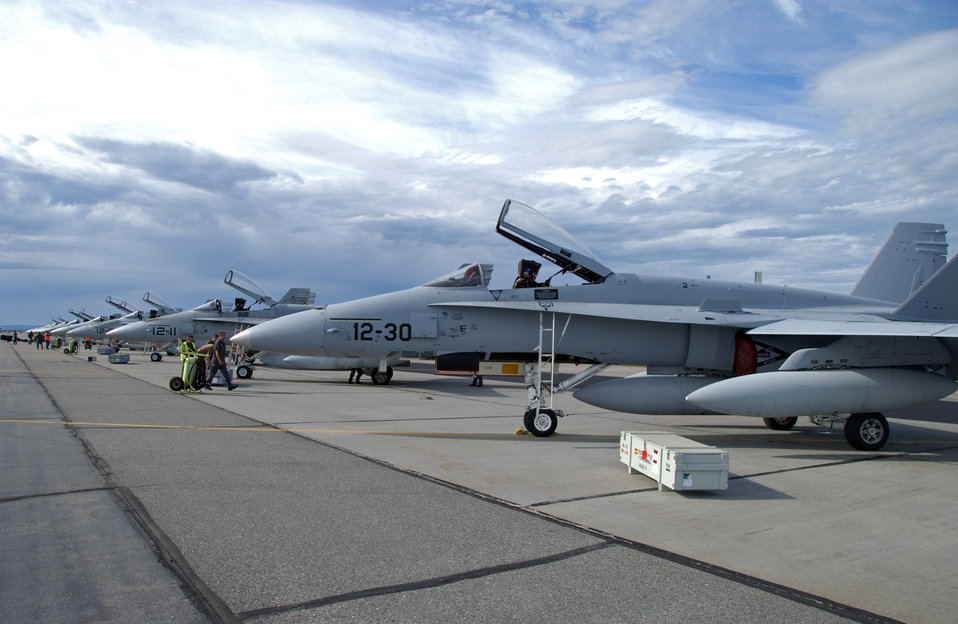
Red Flag-Alaska 07-3

Spanish F-18's sit on the Eielson Air Force Base, Alaska, flight line July 10 waiting to be serviced before a training exercise July. A group of Spanish airmen are participating in Red Flag-Alaska 07-3, a multi-service, multi-platform coordinated, combat operations exercise, which runs through the July 27.